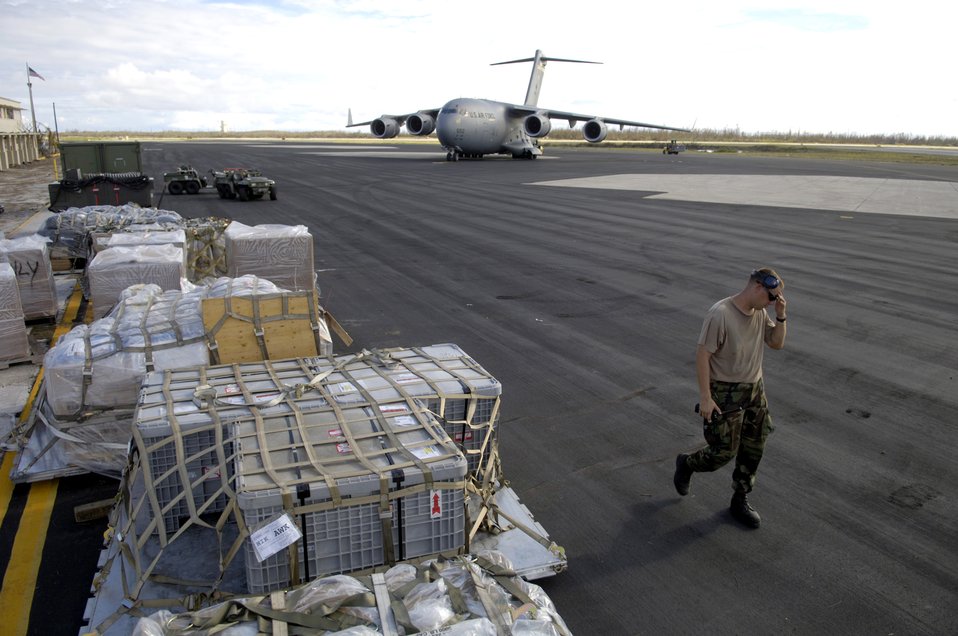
Hickam team begins Wake Island assessment

Tech. Sgt. Timothy Galunas lines up pallets on the Wake Island flightline Sept. 12, after they were offloaded from the C-17 Globemaster III in the background. Sergeant Galunas is with the 36th Contingency Response Group at Andersen Air Force Base, Guam. They are assisting a 53-person team assessing damage left by Super Typhoon Ioke after it hit the island Aug. 31.